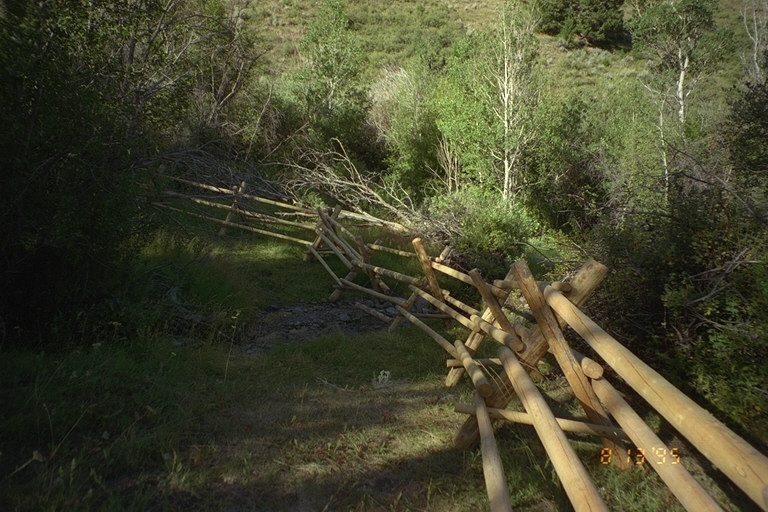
Riparian area Public Lands Salmon Field Office UCSC Upper Columbia Salmon Clearwater District